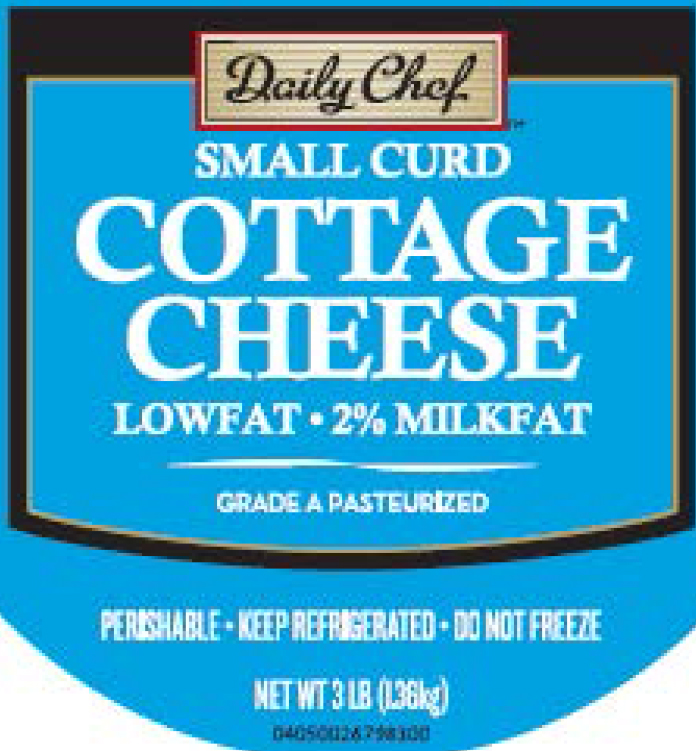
RECALLED – Cottage Cheese products

May 17, 2014 – Product Recall – Kraft Foods Group Voluntarily Recalls Select Cottage Cheese Products Due to Out-of-Standard Storage Temperatures
Certain Knudsen Cottage Cheese, Breakstone’s Cottage Cheese, Simply Kraft Cottage Cheese and Daily Chef Cottage Cheese Products Included in the Recall
.